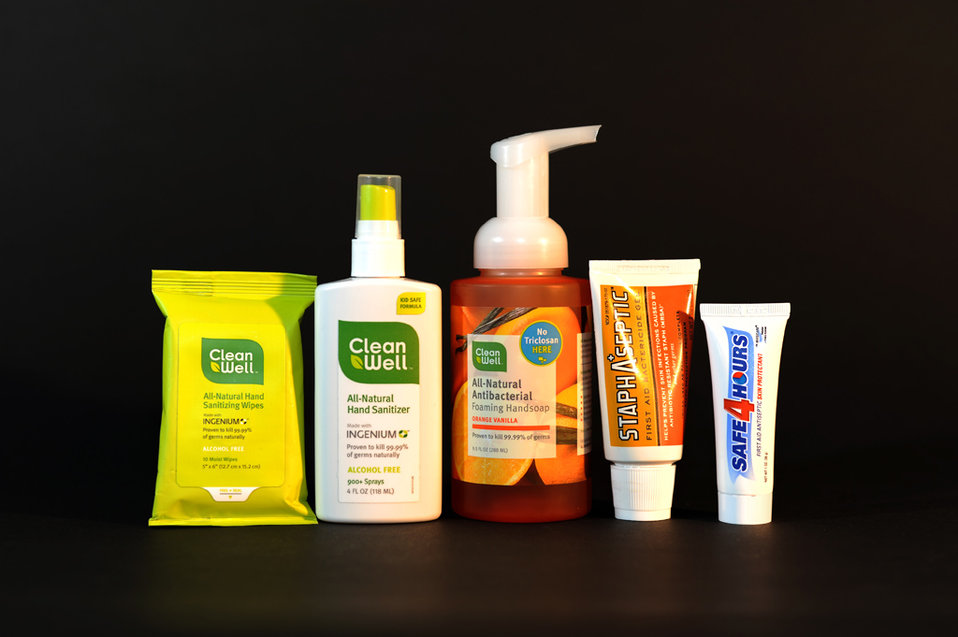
Hand Sanitizers Carry Unproven Claims to Prevent MRSA Infections - Product Photo

FDA considers these over-the-counter products to be unapproved drugs because their labeling makes unproven claims, such as “kills 99.9% of MRSA.” FDA has warned the companies that market these products that unproven claims violate federal law and subject them to legal action. Read this FDA Consumer Update: www.fda.gov/ForConsumers/ConsumerUpdates/ucm251816.htm